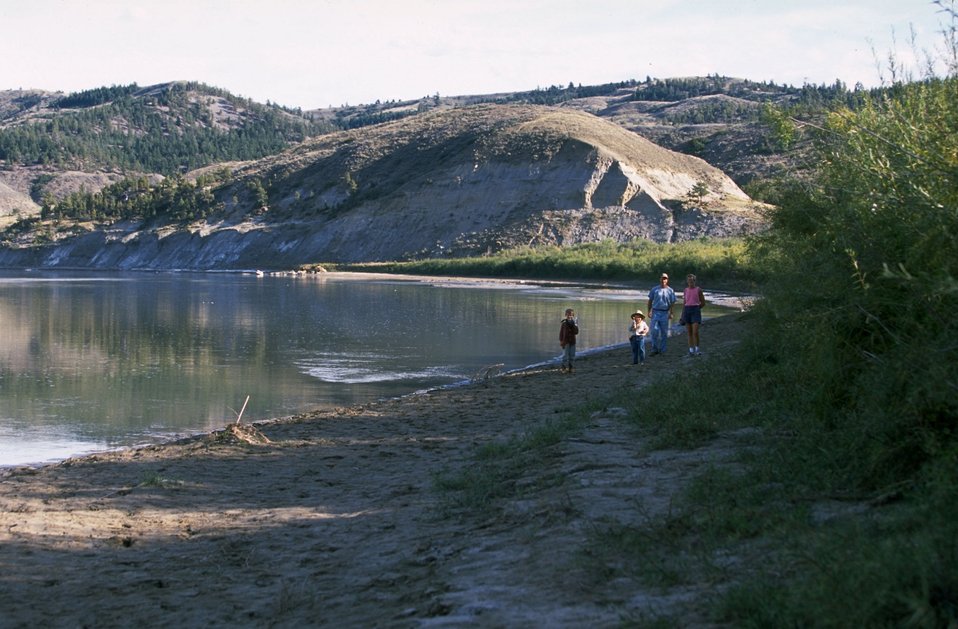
Enjoying the Upper Missouri River